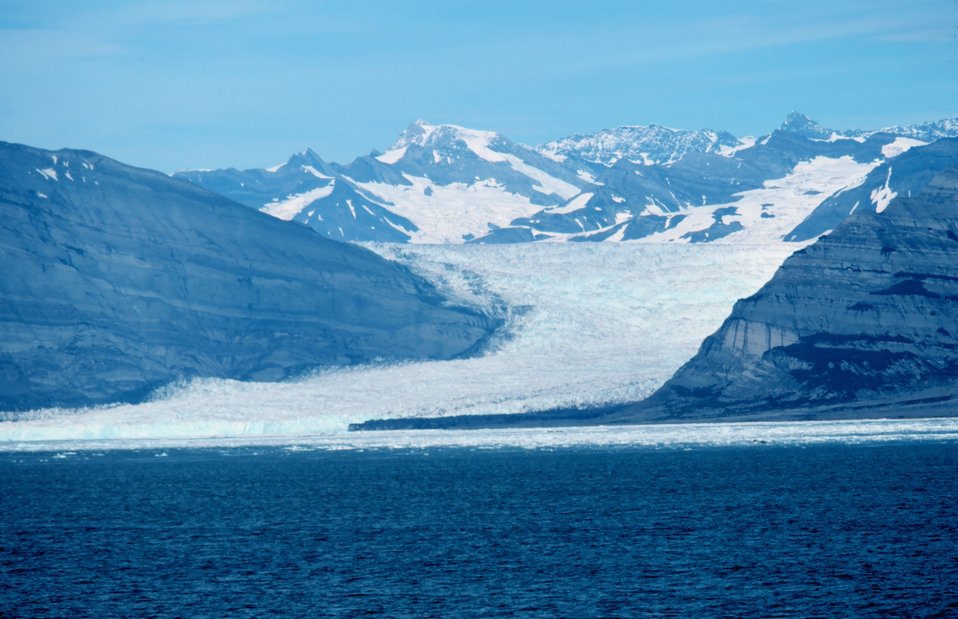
Icy Bay, Yahtse Glacier - current meter by helicopter